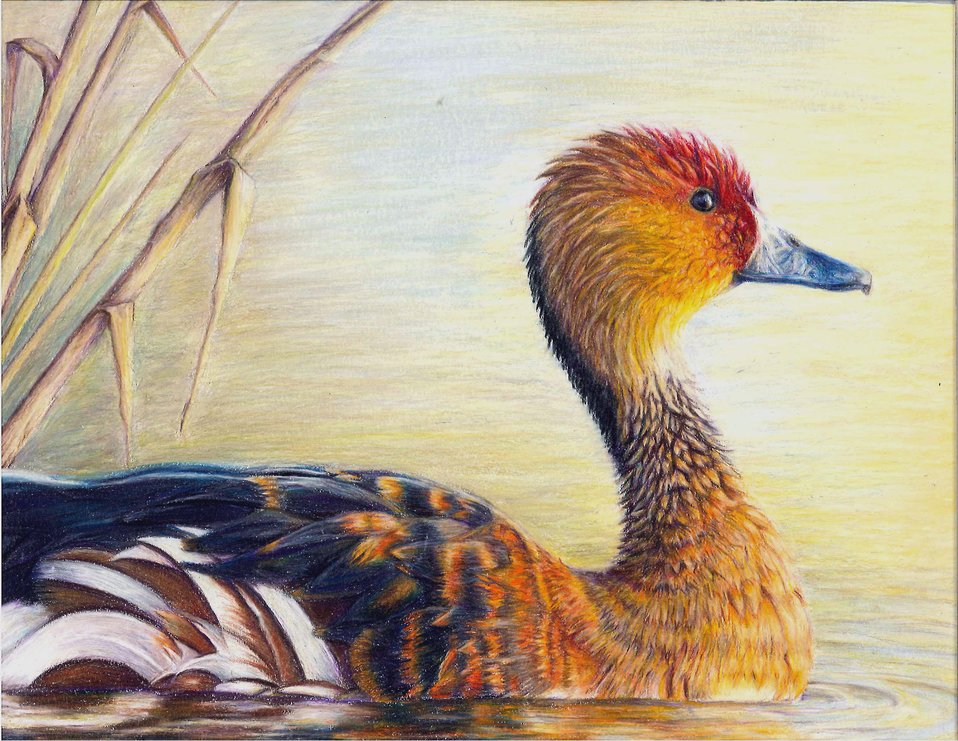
Wyoming

2012 Jr Duck Stamp Program
State Best of Show
Wyoming